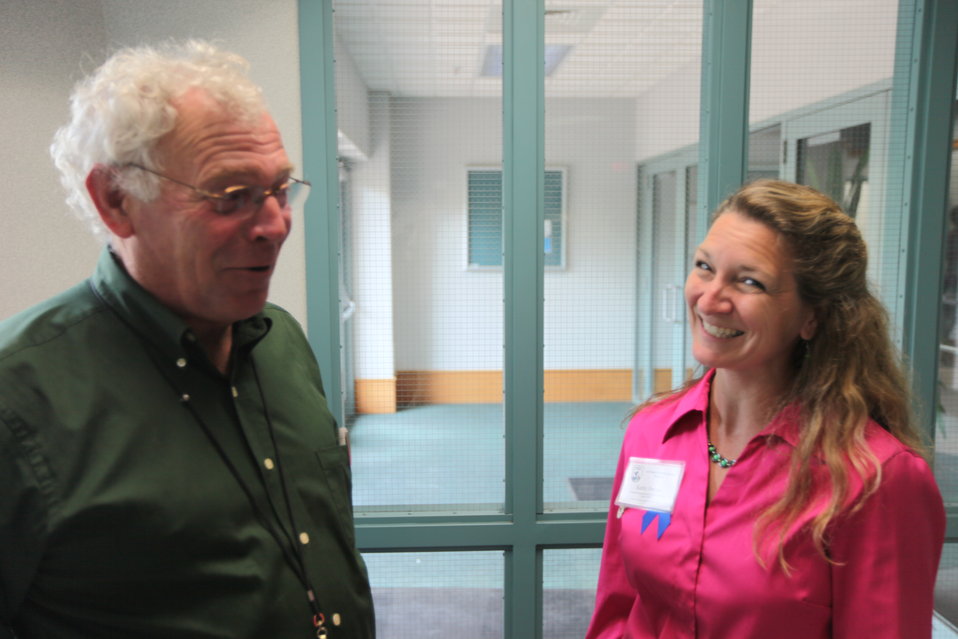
Northeast Region Employee Appreciation Awards